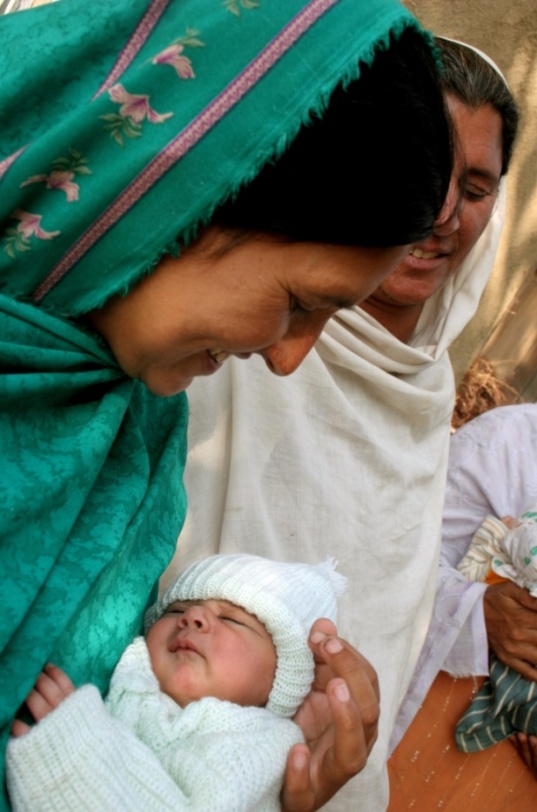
mother newborn